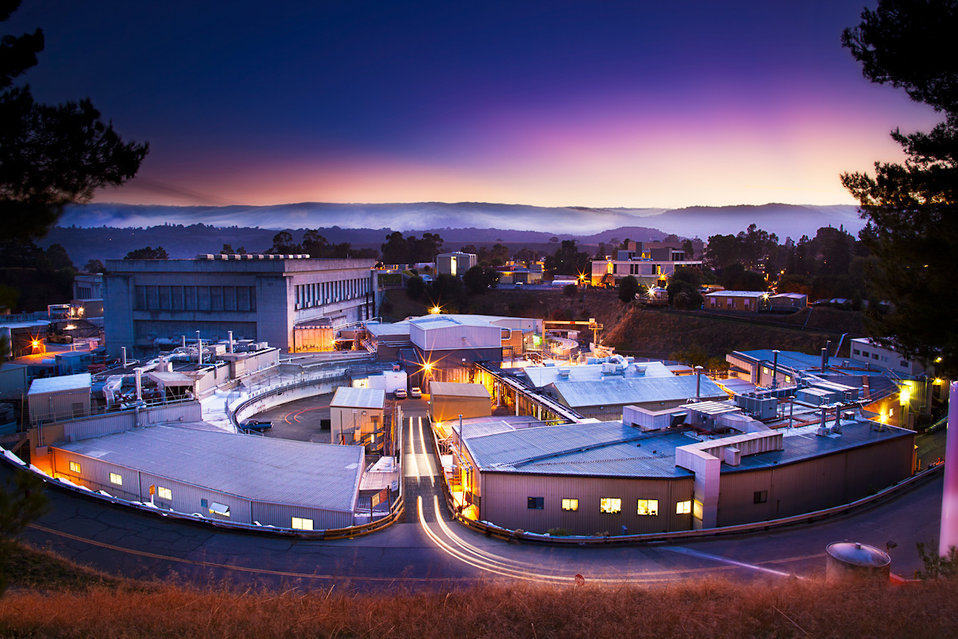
Stanford Synchrotron Radiation Laboratory (SSRL) at dusk.

SSRL is a division of Stanford Linear Accelerator Laboratory (SLAC) devoted to research using synchrotron radiation, the electromagnetic radiation emitted when charged particles travel in curved paths. SSRL is funded by DOE as a national user facility.